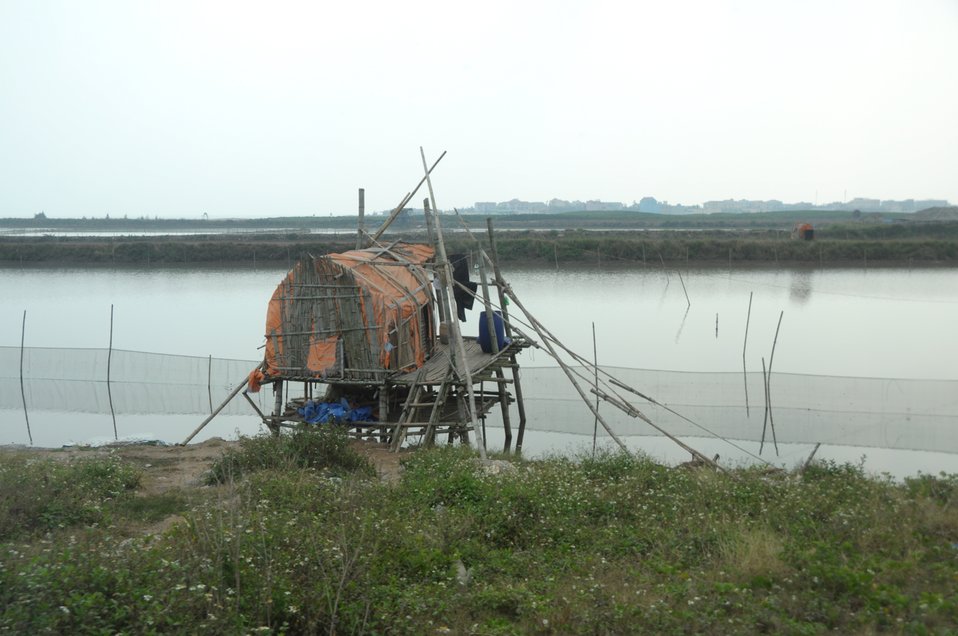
A shrimp farm in Nam Dinh.

Quat Lam, Nam Dinh. January 16, 2014.